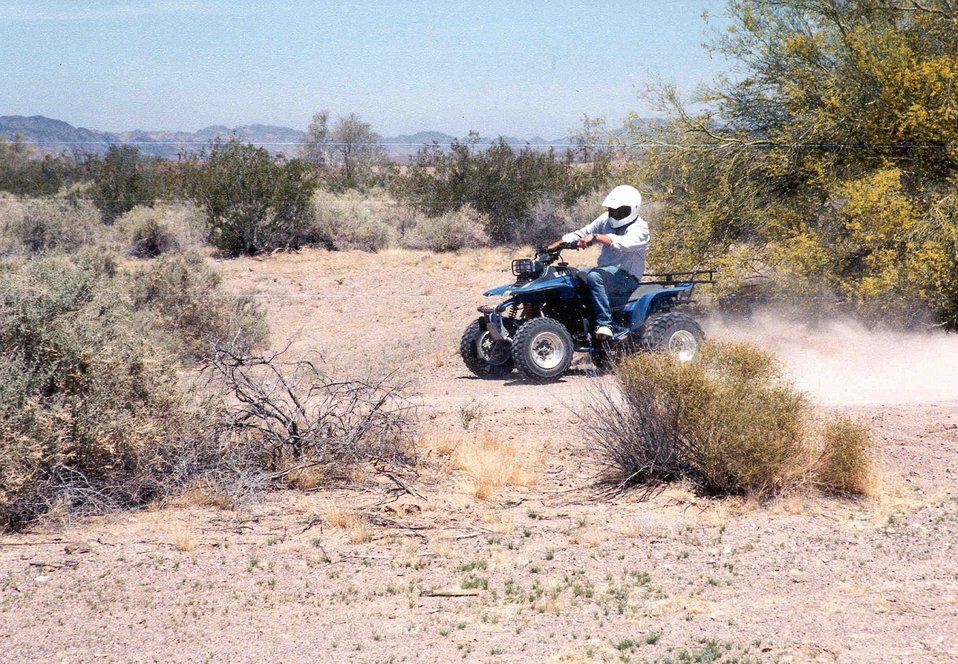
A recreationist riding his all-terrain vehicle on a trail on public lands